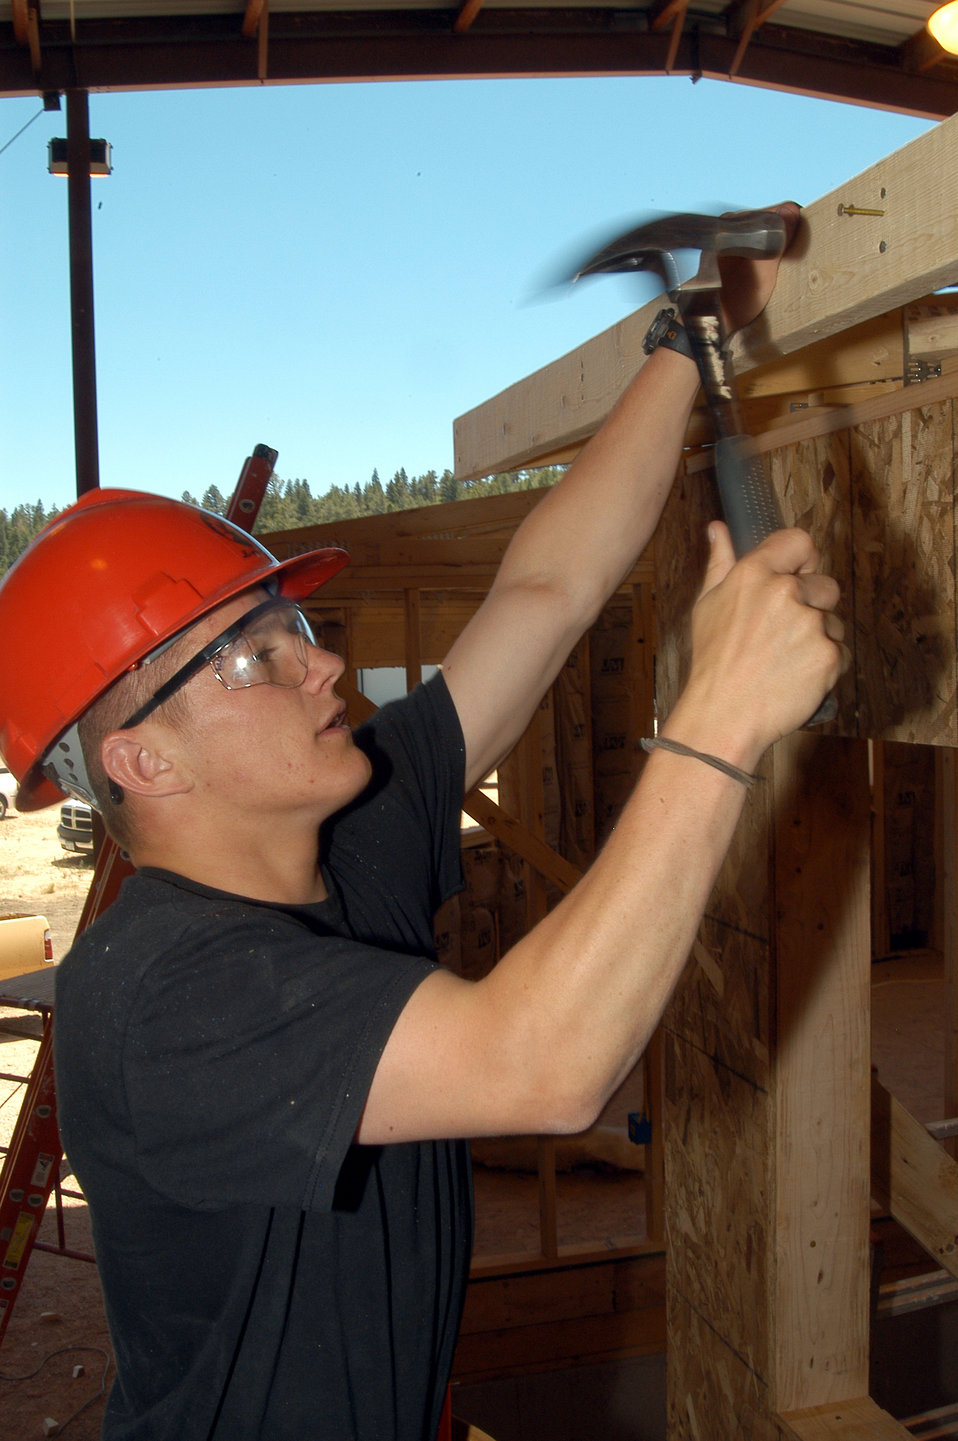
Cadets get 'constructive'

U.S. AIR FORCE ACADEMY, Colo. -- Cadet 2nd class Chad Winters hammers a board into the frame of a hogan, a traditional Navajo home. Each summer, cadets in the field engineering readiness laboratory here build the shelters to learn civil engineering from Air Force craftsmen. Once the homes are completed, they are donated to Southwestern Navajo tribes.